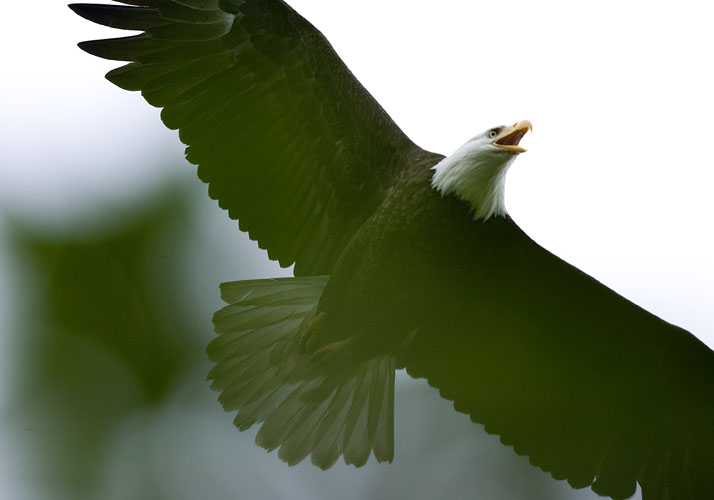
Wildlife of Kodiak Refuge

Bald Eagle